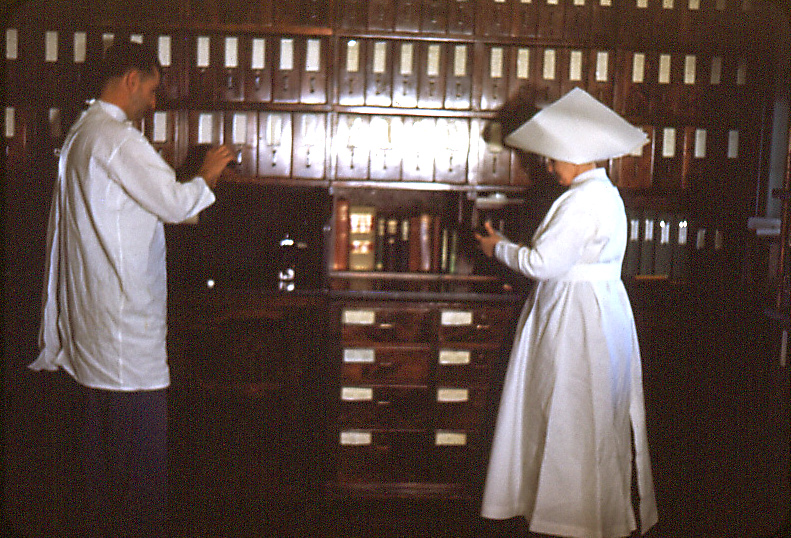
This image depicted the interior of the Carville, Louisiana Leprosarium's pharmacy, located inside the hospital's infirmary. Patients who'd been given a prescription by their physician, presented them at the pharmacy window where they were filled. In this particular scene, it's unknown whether or not the pharmacist was present, but two technicians were in the process of filling patient prescriptions, one of whom was a sister. This building was constructed by the state of Louisiana in 1894, when five men and two women with "Hansen's disease" (HD), then called leprosy, were brought by barge to an abandoned sugar plantation, known only as Indian Camp, on a bend of the Mississippi River between Baton Rouge and New Orleans. Now - more than a hundred years later - the Gillis W. Long Hansen's Disease Center, now known as the National Hansen's Disease Programs, is recognized worldwide for its achievement in Hansen's disease treatment, rehabilitation, training and education."